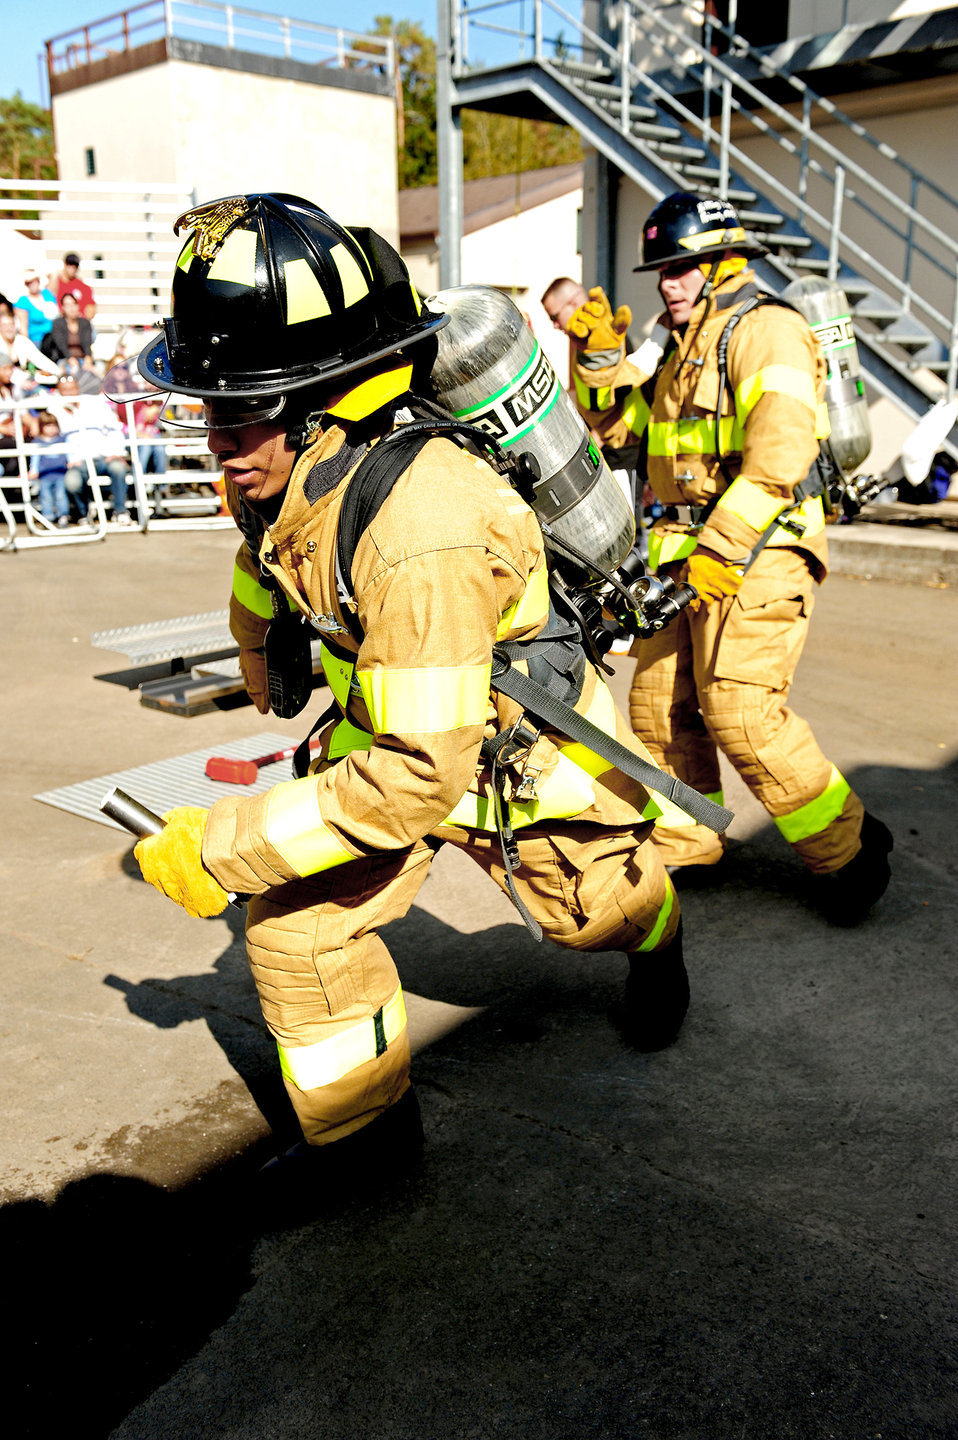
2010 USAFE Combat Firefighter Challenge1

U.S. Air Forces in Europe firefighters participate in a Firefighter Combat Challenge relay race Oct. 9, 2010 at the 435th Construction and Training Squadron contingency training site at Ramstein Air Base, Germany. The competition consisted of a timed, five-part obstacle course.